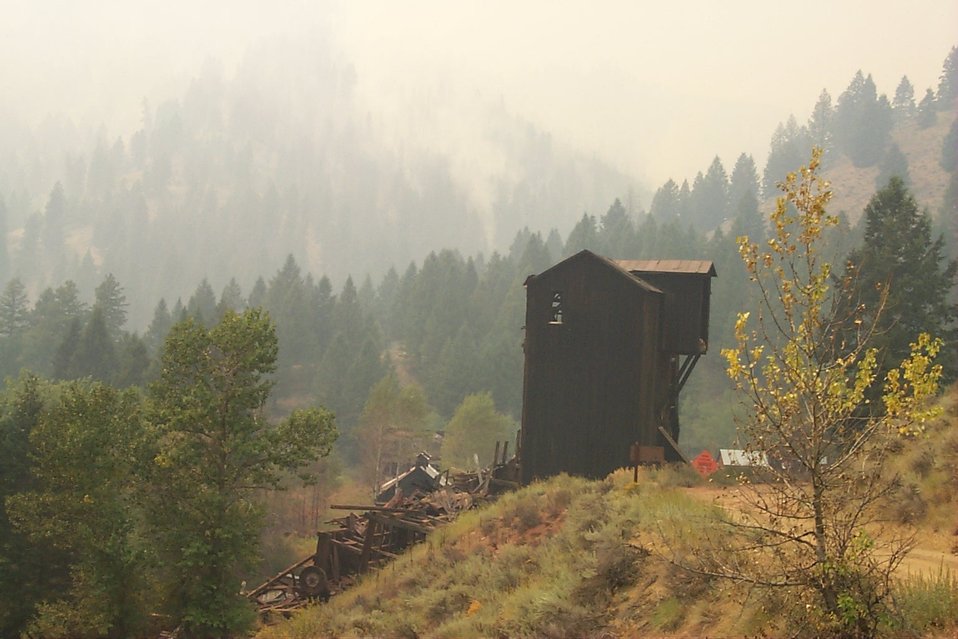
Urban interface Fire Clearwater Fire Salmon Field Office USRD Upper Snake River District